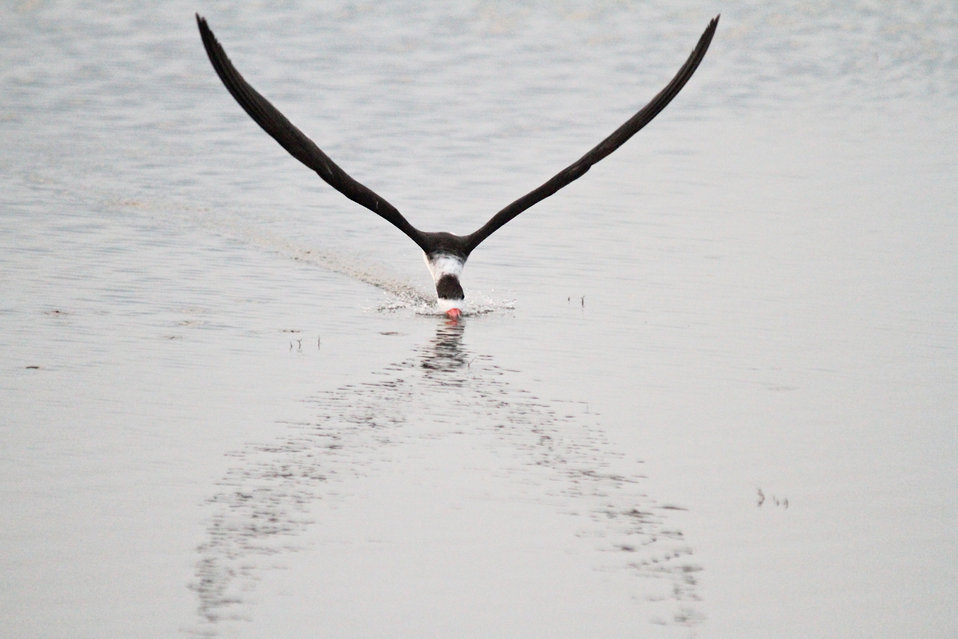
Black Skimmer with reflection on the water